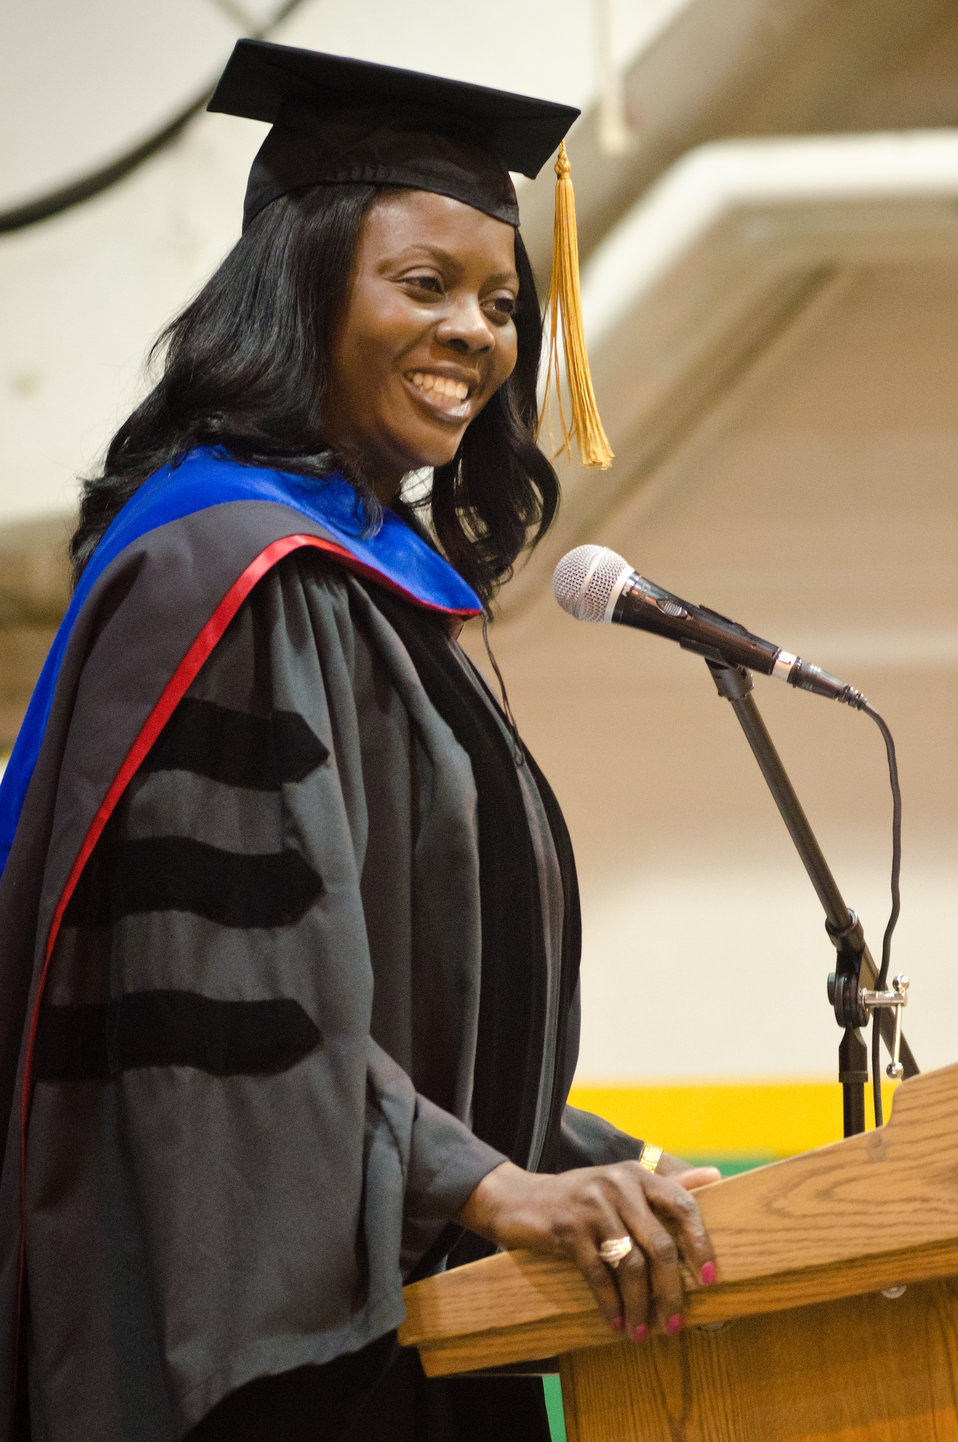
Dr. Chavonda Jacobs-Young, United States Department of Agriculture, Associate Administrator, Agriculture Research Services delivers the closing remarks to the 2012 graduating class at the Chicago High School for Agricultural Sciences in Chicago, Illinois on Friday, June 8, 2012. She spoke of the future of agricultural sciences and research available to the graduating class.